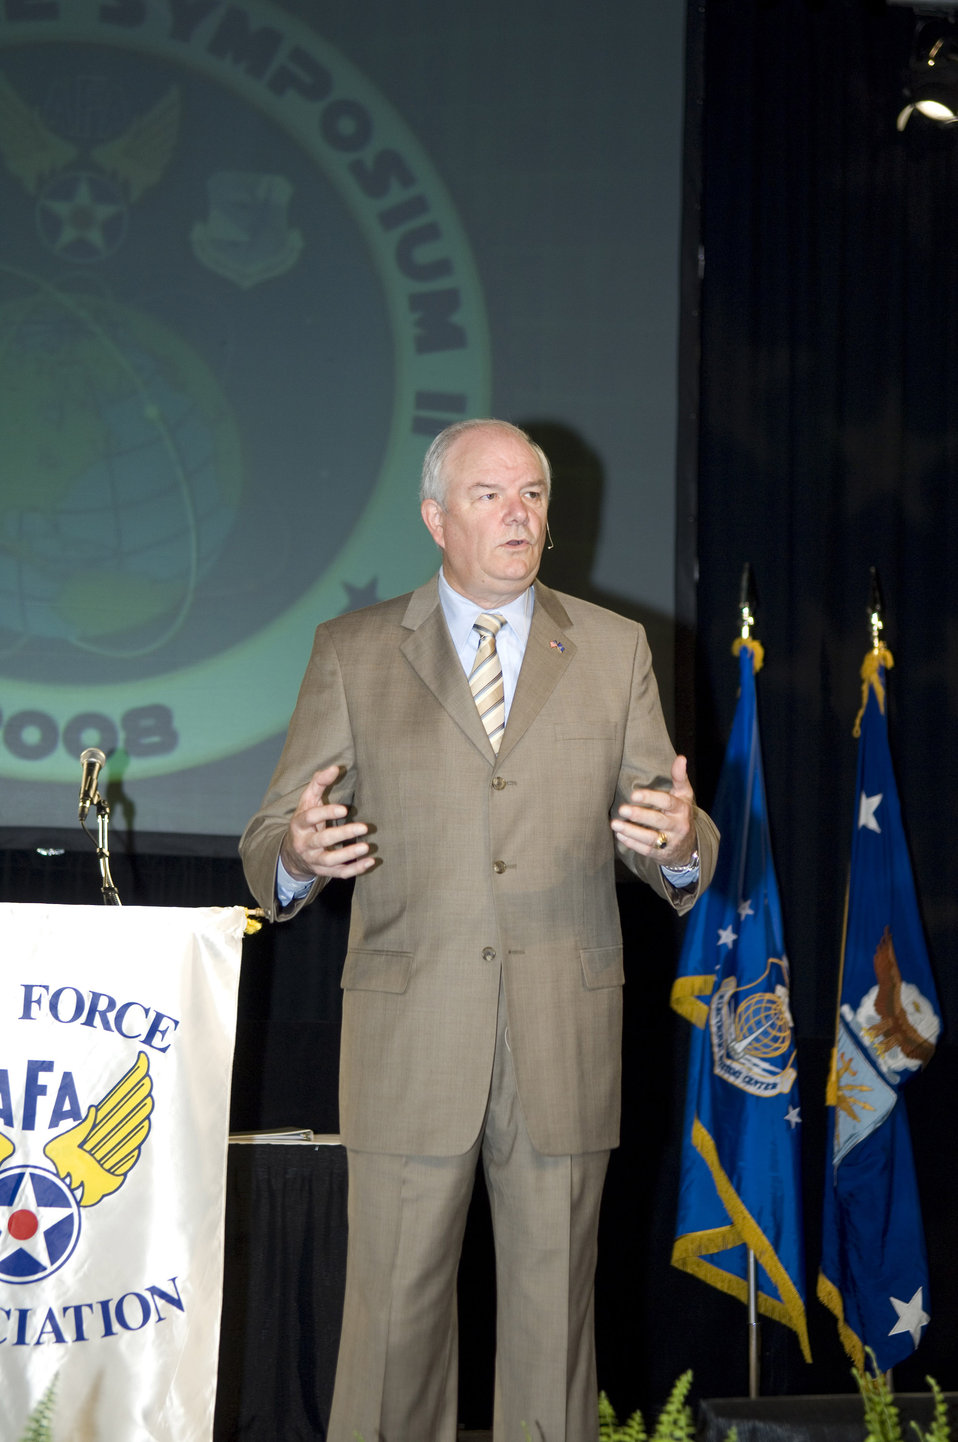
Secretary Wynne speaks at cyber symposium

Secretary of the Air Force Michael W. Wynne addresses the Air Force's second Cyberspace Symposium in Marlborough, Mass., June 18.